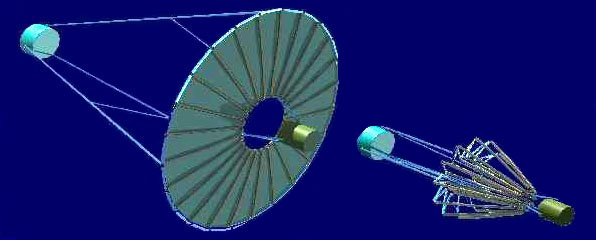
Membrane mirror

KIRTLAND AIR FORCE BASE, N.M. -- An artist concept shows a thin-film membrane mirror, at right, in a folded configuration so it can fit aboard a rocket and then opened in space as shown at left. Researchers at the Air Force Research Laboratory's directed energy directorate here have produced a 1-meter-diameter (about 3.25-feet), optical-quality membrane mirror. Their goal is to produce a lightweight 10-meter membrane mirror, which could be used as part of a space-based telescope.